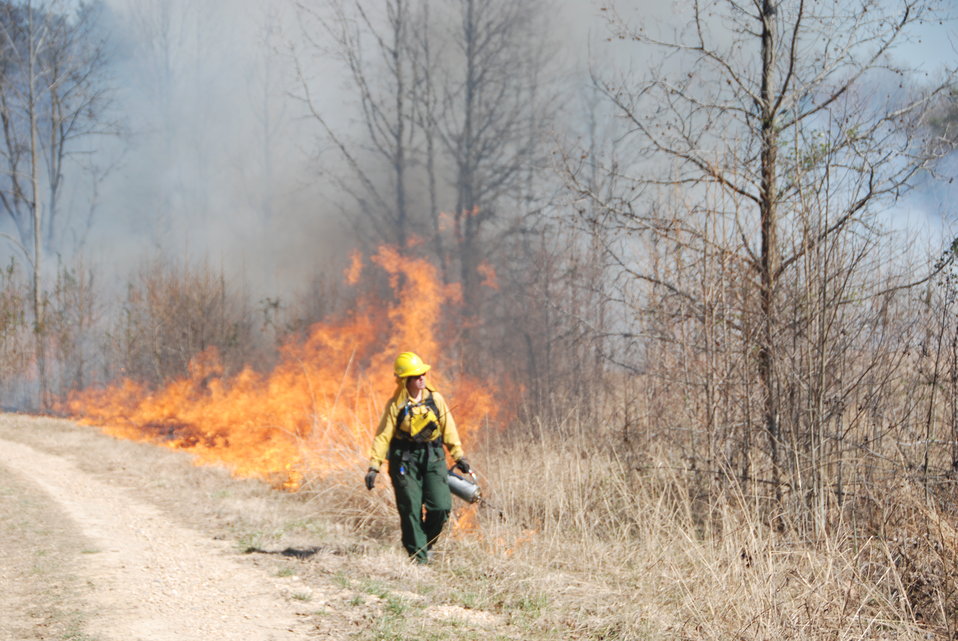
Breathing Fire Back into the Land

Laurel, Maryland, April 14, 2012: Deborah Landau of The Nature Conservancy uses a drip torch to light a controlled burn in a grassland that had not burned for several years. The burn, at Patuxent Research Refuge, was to maintain native grasslands, remove woody vegetation, and control invasive species such as Korean Lespedeza.